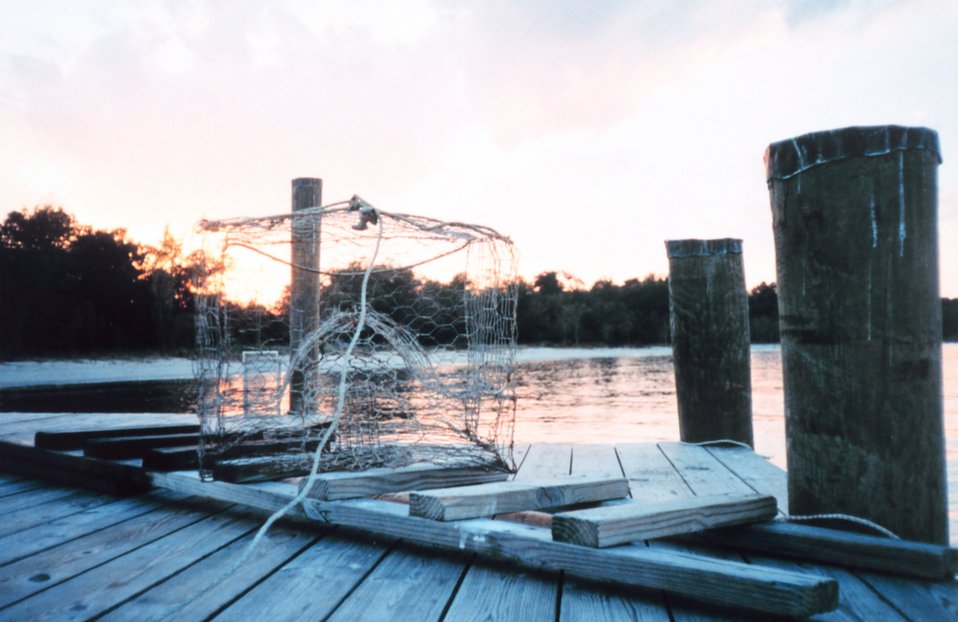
Crab pot on the dock at the end of the day